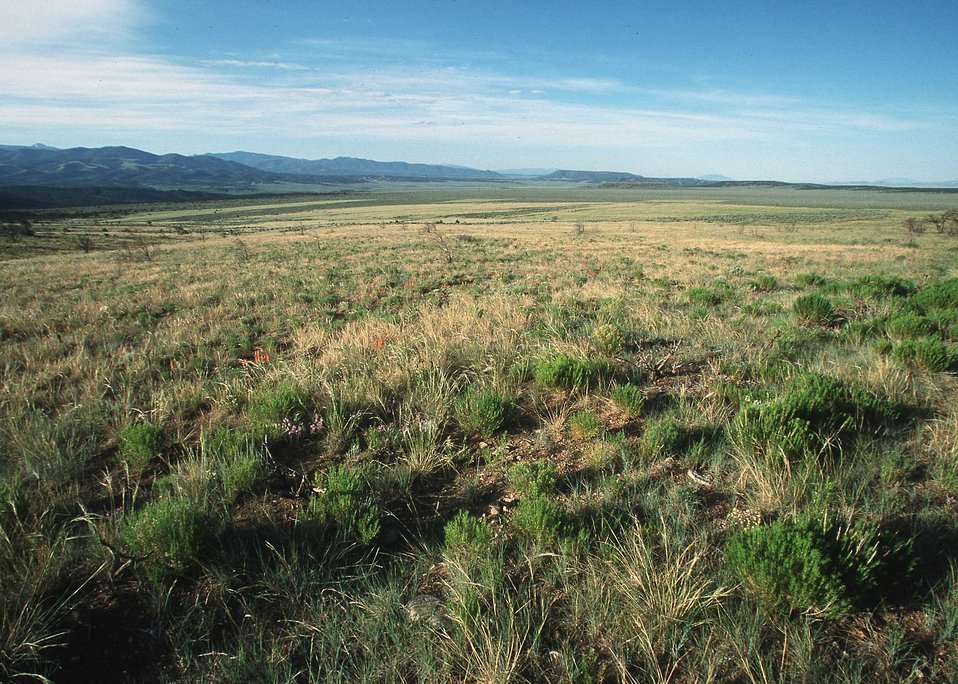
Sage field treated with HydroAX.